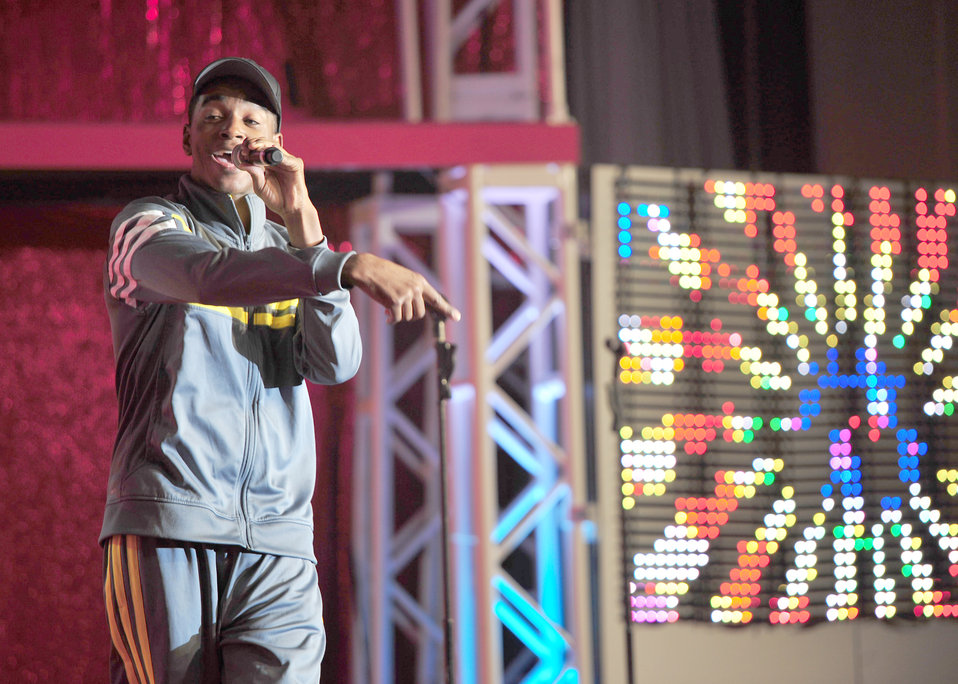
Tops in Blue ‘wows’ audience with their Talent

Airman 1st Class Steve Pearson, Tops in Blue vocalist, performs at the 2011 tour “Rhythm Nation.” Their performance featured all types of music along with precision choreography and dazzling visual impact.